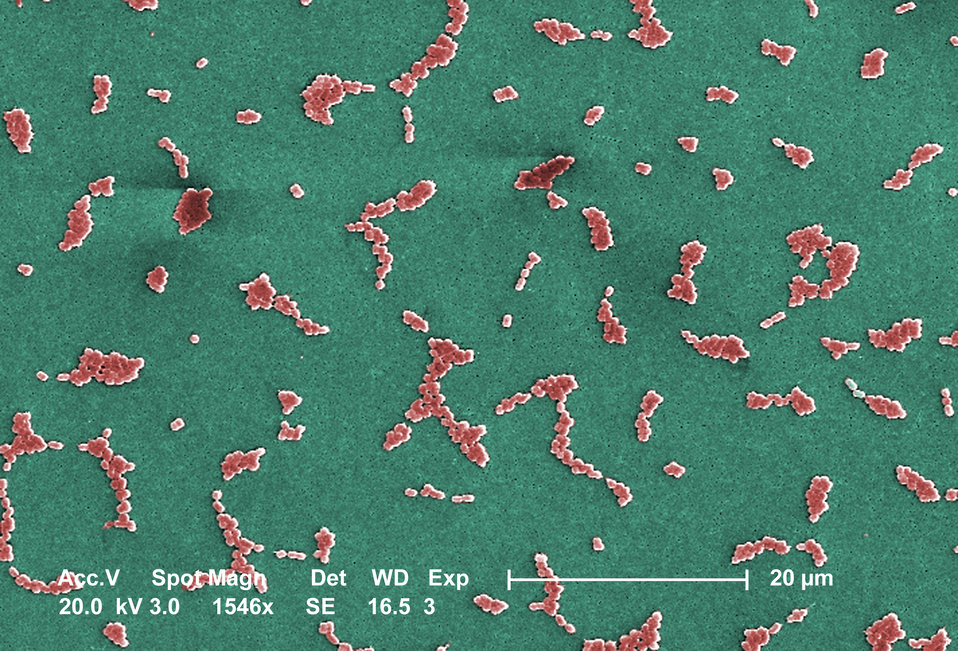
This SEM depicts a number of clusters of aerobic Gram-negative, non-motile Acinetobacter baumannii bacteria under a relatively low magnification of 1,546x. See PHIL 9328 for a black and white version of this image.